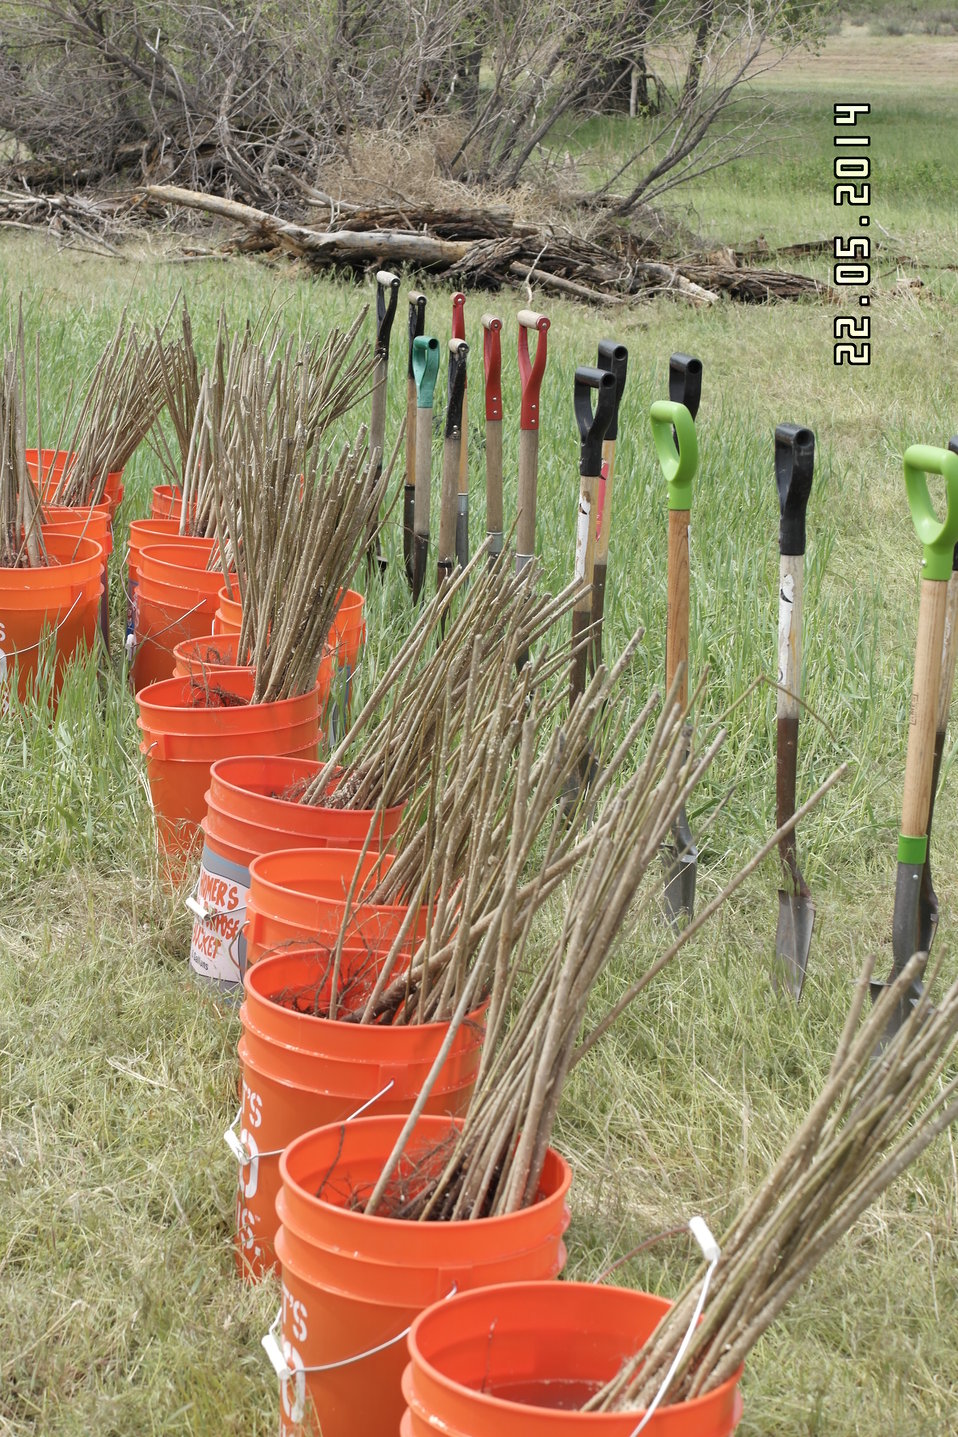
Secretary Jewell Announces $6.7 for Youth Conservation Job

Jewell made the announcement at an event at Rocky Mountain Arsenal National Wildlife Refuge outside Denver, Colorado, where she was joined by U.S. Department of Agriculture (USDA) Deputy Under Secretary for Natural Resources and the Environment Arthur “Butch” Blazer; Greg Knadle, Vice President for Government Relations of the National Fish and Wildlife Foundation (NFWF); Refuge Manager David Lucas and youth corps members of Groundwork Denver.